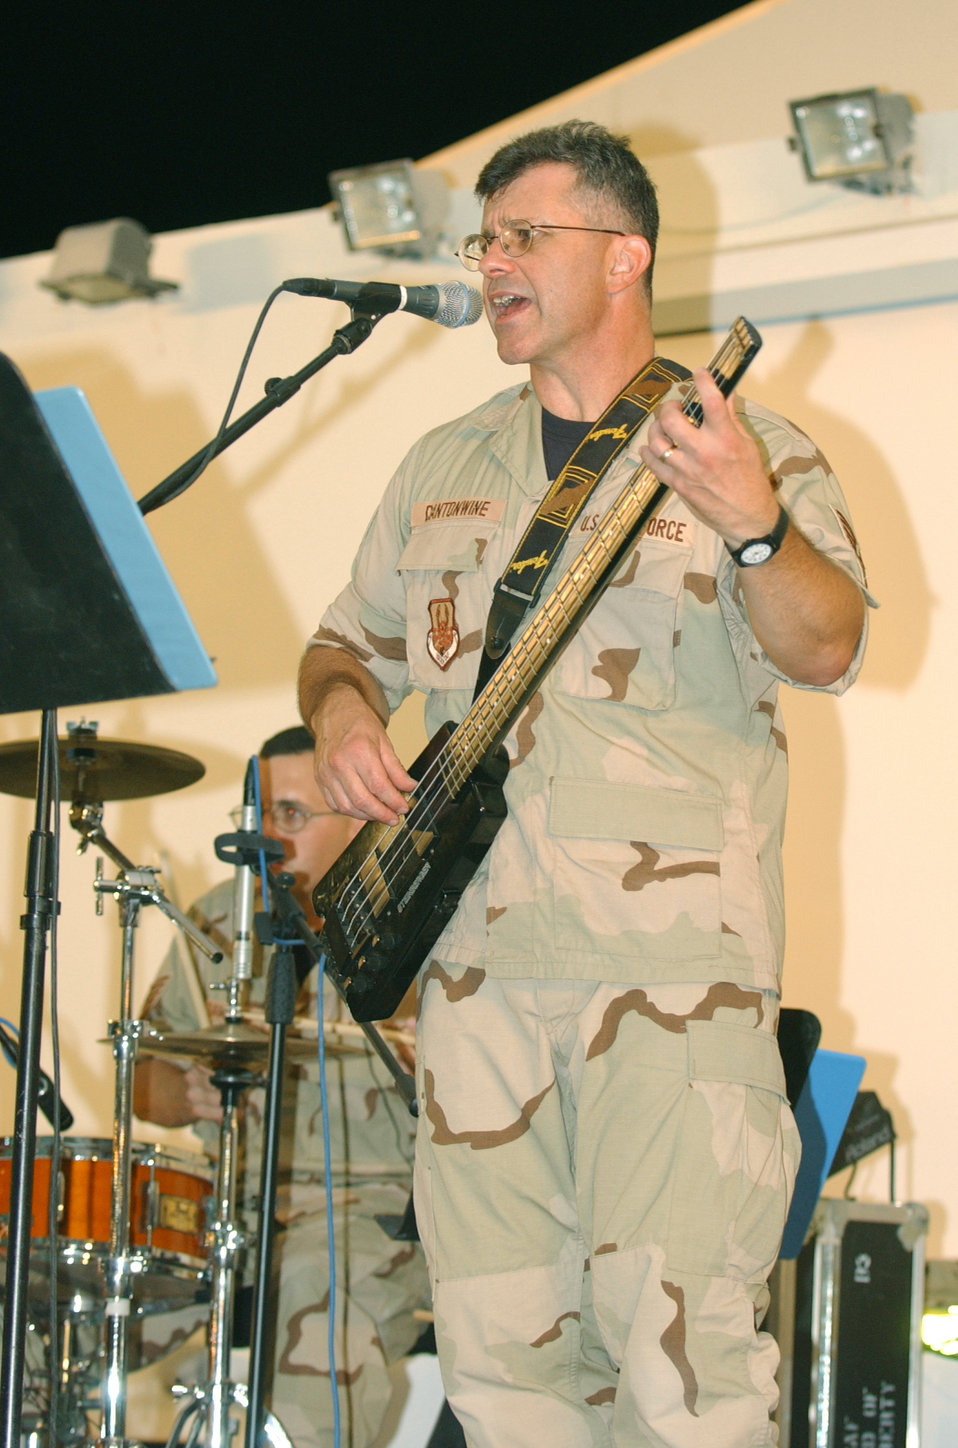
Air Force musicians join AEF rotations

SOUTHWEST ASIA -- Tech. Sgt. Guy Cantonwine performs during a U.S. Air Force Band of Mid-America's show here. The show was among several in the Middle East as part of the band's tour during its first air and space expeditionary force deployment.